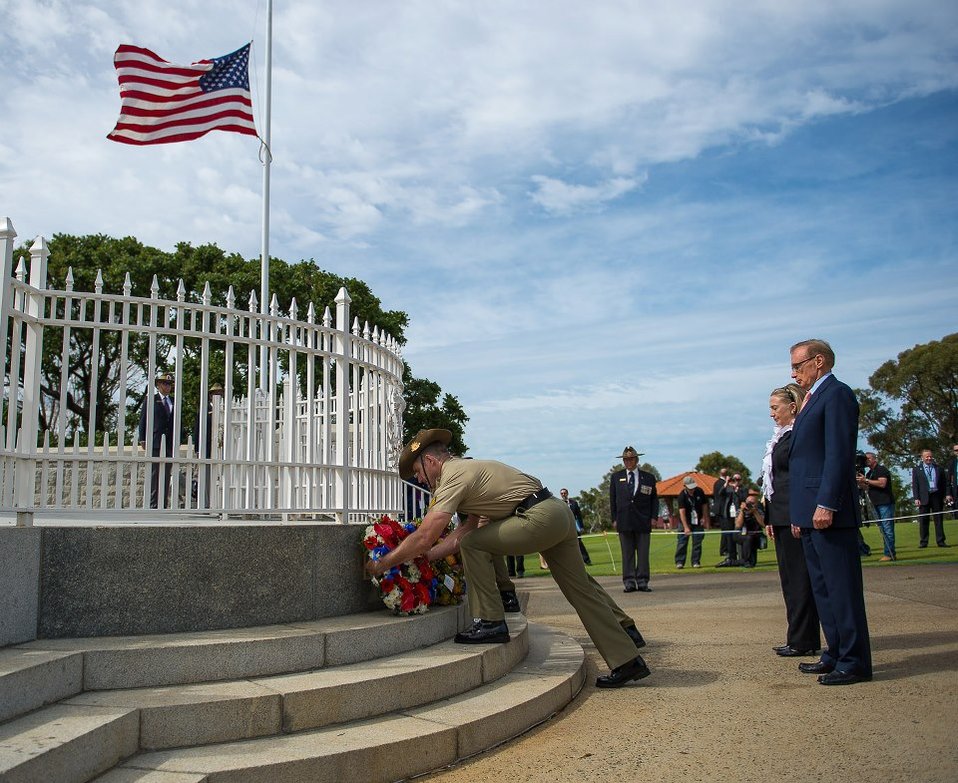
Secretary Clinton and Australian Minister Carr at a Wreath-Laying Ceremony

U.S. Secretary of State Hillary Rodham Clinton stands with Australian Foreign Minister Robert Carr during a wreath-laying ceremony at the State War Memorial at Kings Park and Botanic Garden in Perth, Australia, November 14, 2012. [U.S. Embassy in Canberra, Australia photo by Travis Longmore/ Public Domain]